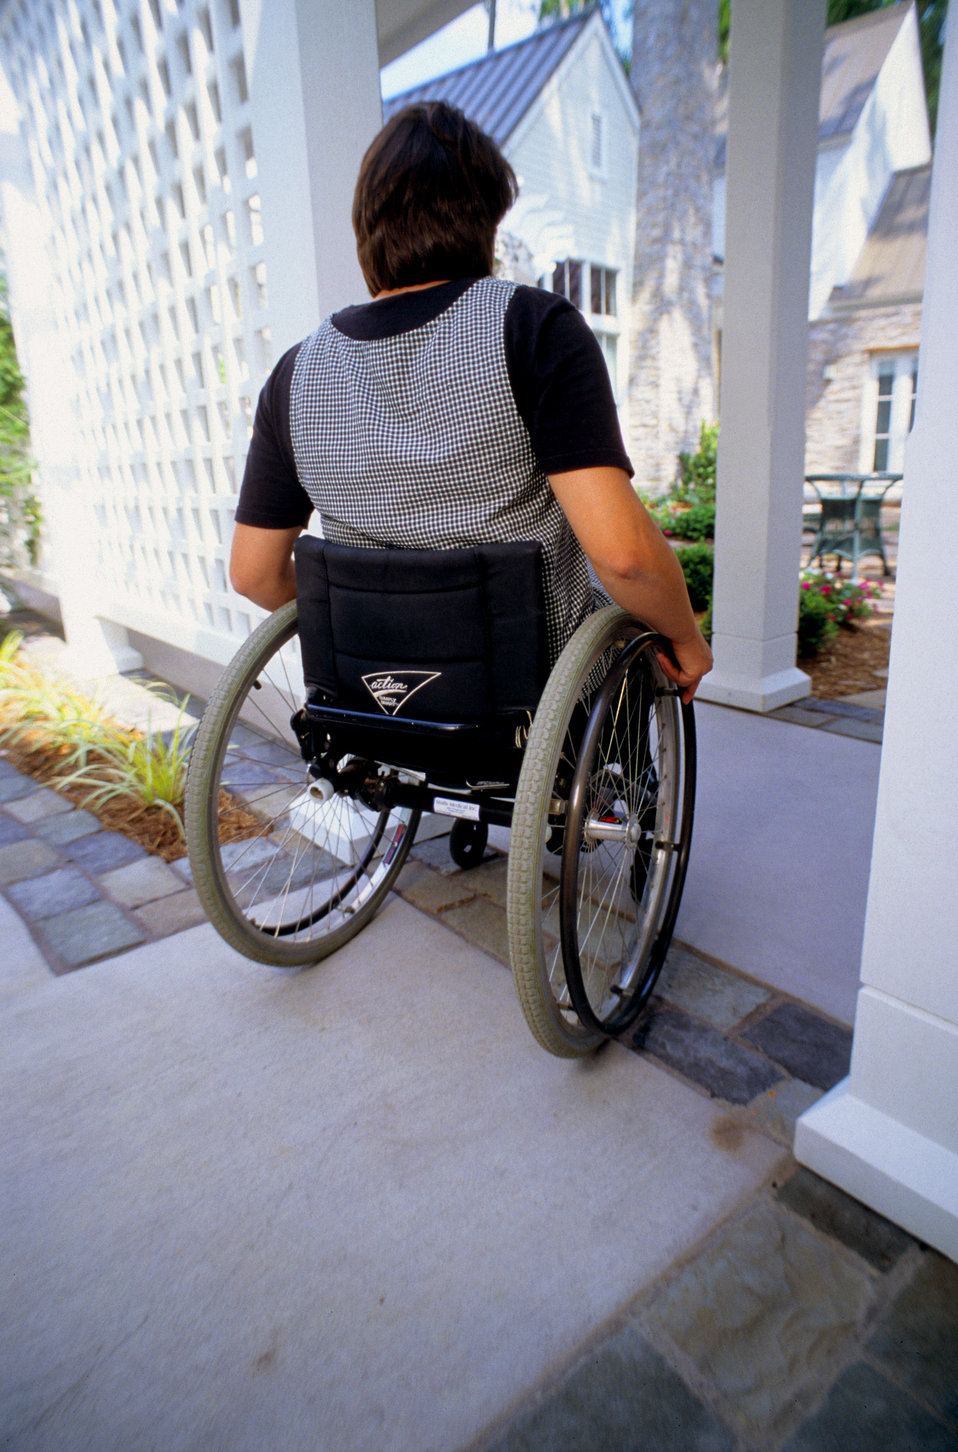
This is one of two images, (PHIL# 9165, 9166), which depicted an adult mobility-challenged woman, who was in her wheelchair as she was rolling from a home's driveway onto a smooth concrete pathway, then would roll unto a stepless route leading to the home's back door. The accessible route avoided stairs, and abrupt changes in height, which would be a problem for all users, especially those with mobility problems, child strollers, or rolling luggage. The covered entrance provided protection from the elements when entering and exiting, particularly when extra time was needed.